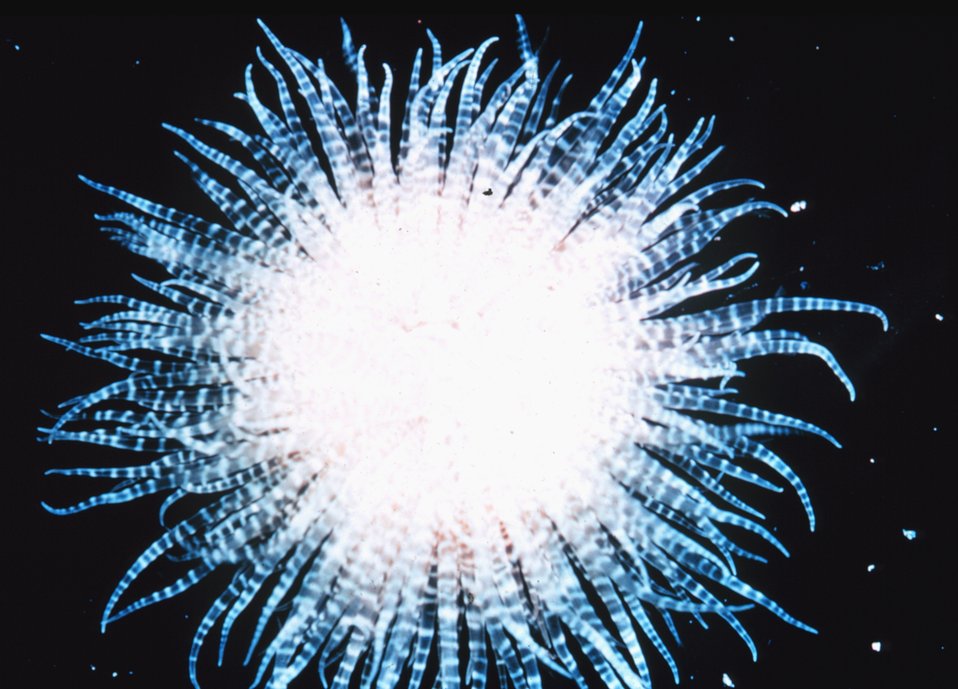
Anemone